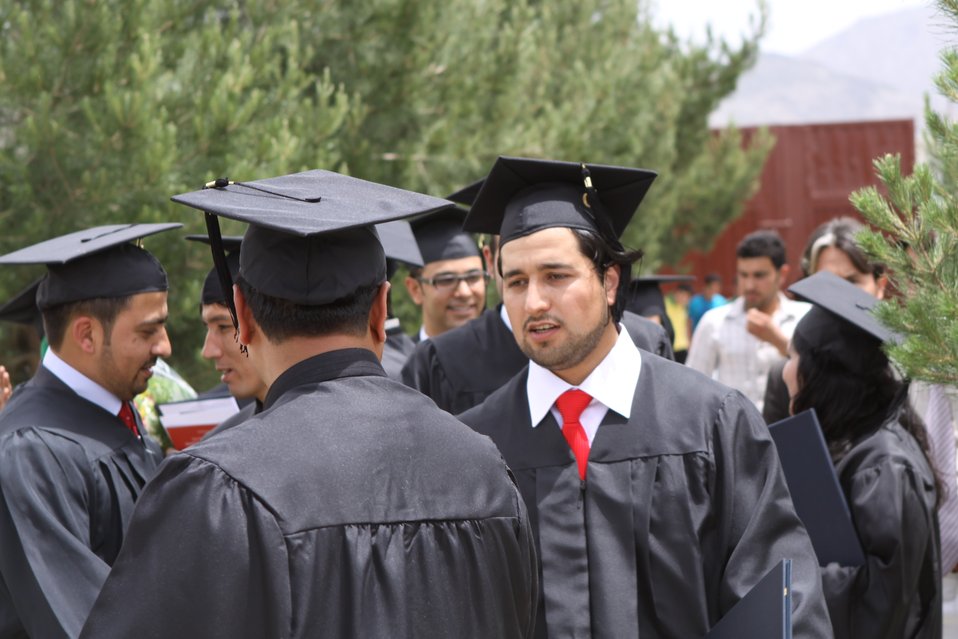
100526 AUAF Graduation 336